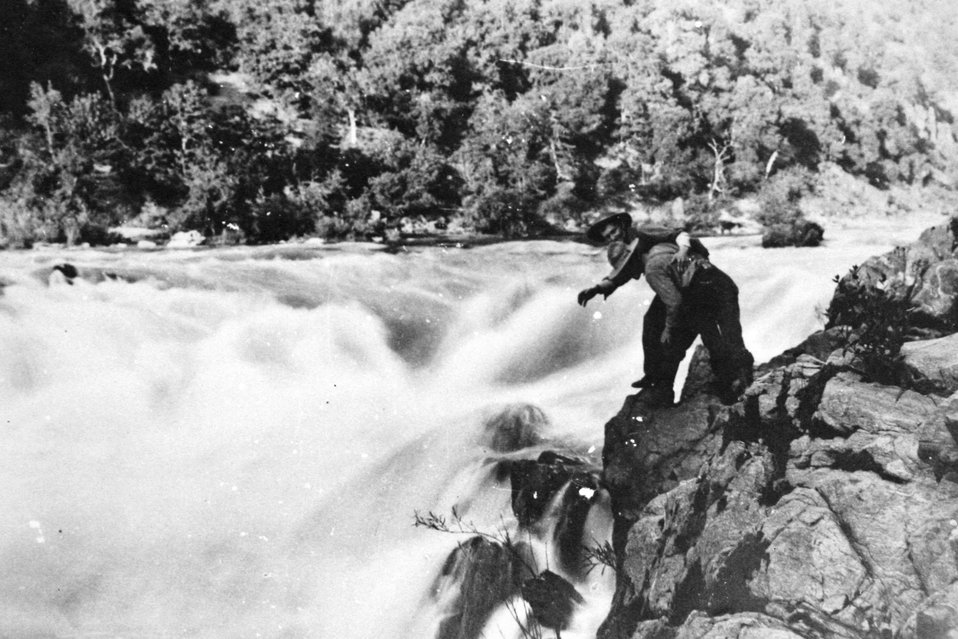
Rainie Falls